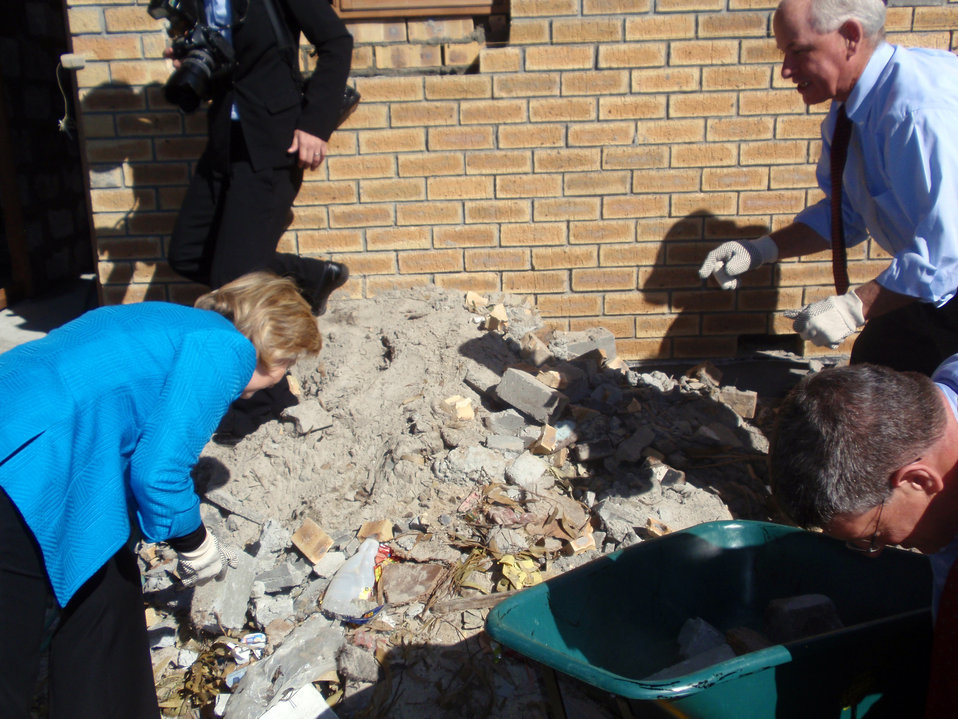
Secretary Clinton Visits Victoria Mxenge Housing Development

U.S. Secretary of State Hillary Rodham Clinton (left) and U.S. Department of State Assistant Secretary for Public-Affairs PJ Crowley get to work at Victoria Mxenge Housing Development in Cape Town, South Africa August 8, 2009.